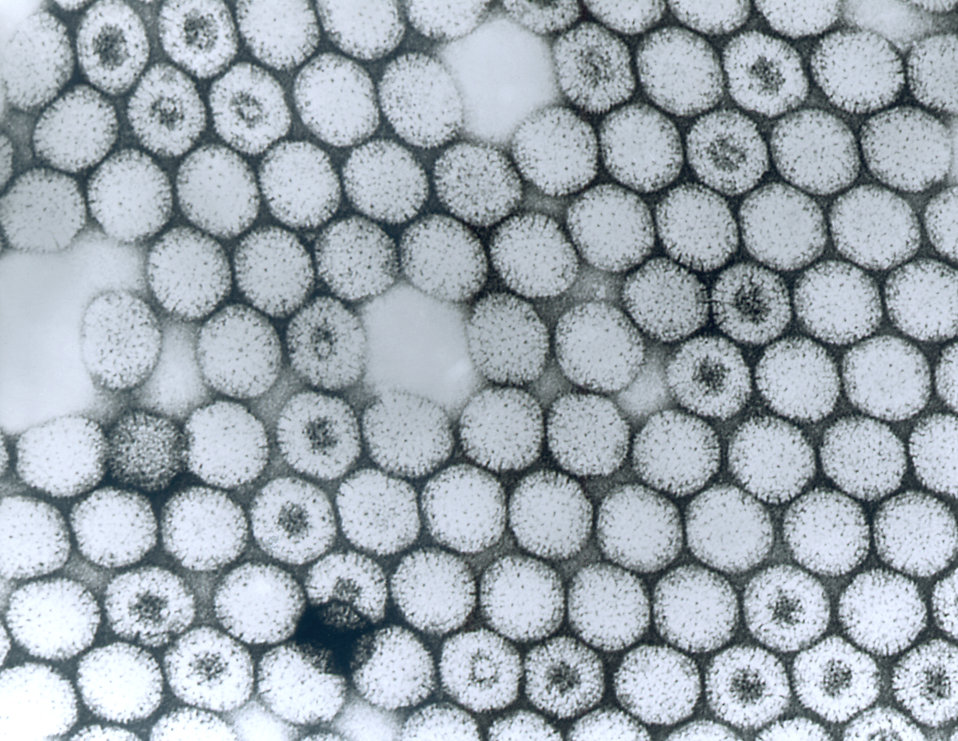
This transmission electron micrograph (TEM) depicted numbers of reovirus type 3 virions.